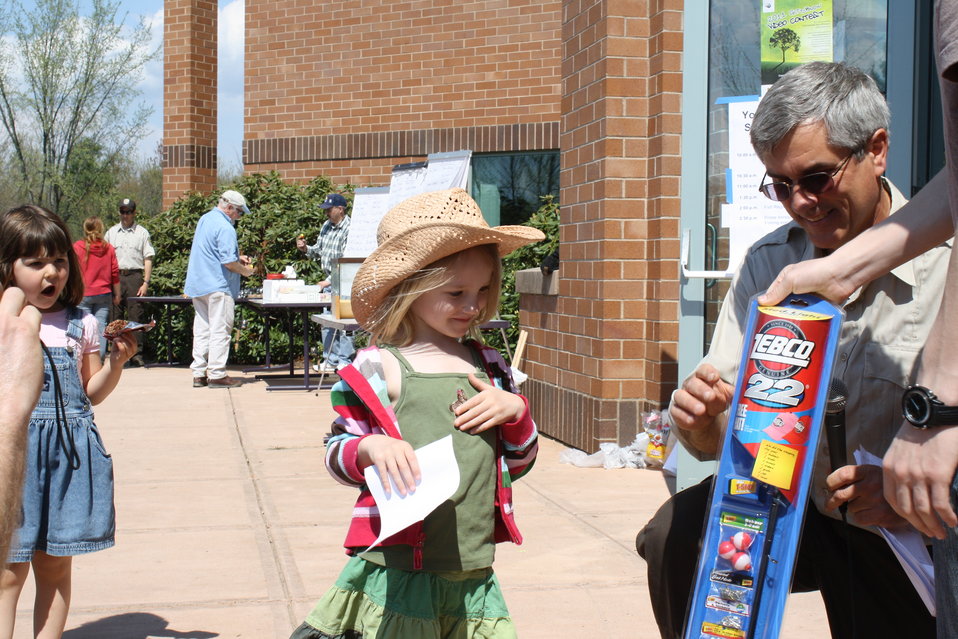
One of the derby winners!

A young winner at the USFWS fishing derby in Hadley, MA on May 7th.